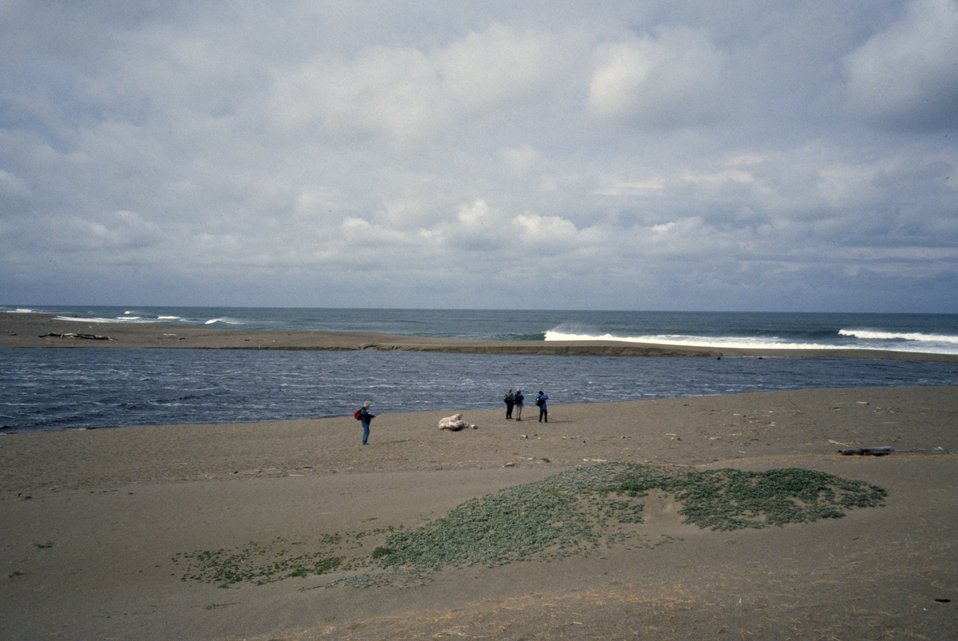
Point Reyes Great Beach